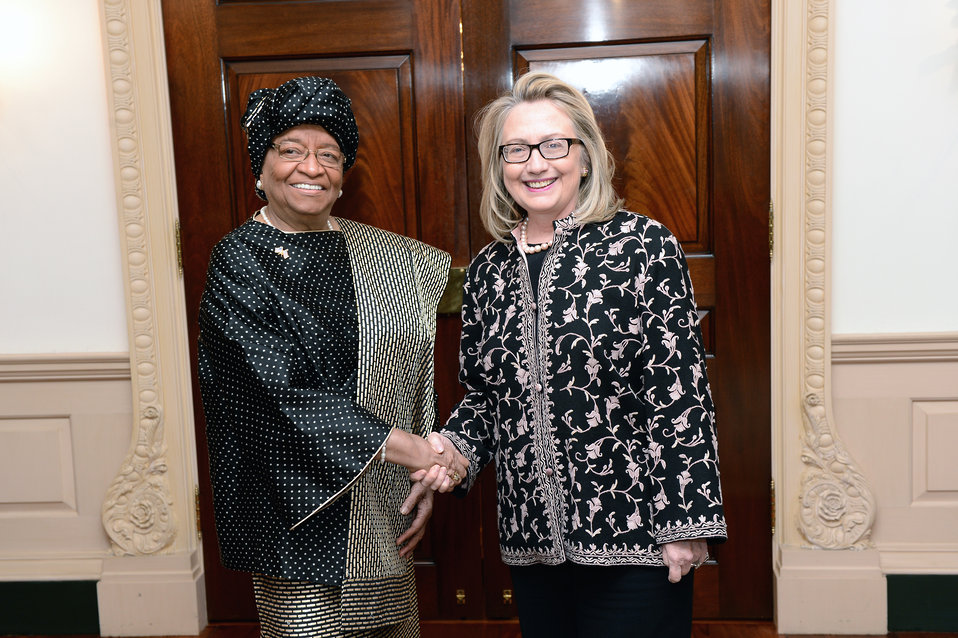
Secretary Clinton Meets With Liberian President Sirleaf

U.S. Secretary of State Hillary Rodham Clinton meets with Liberian President Ellen Johnson Sirleaf at the U.S. Department of State in Washington, D.C., January 15, 2013.